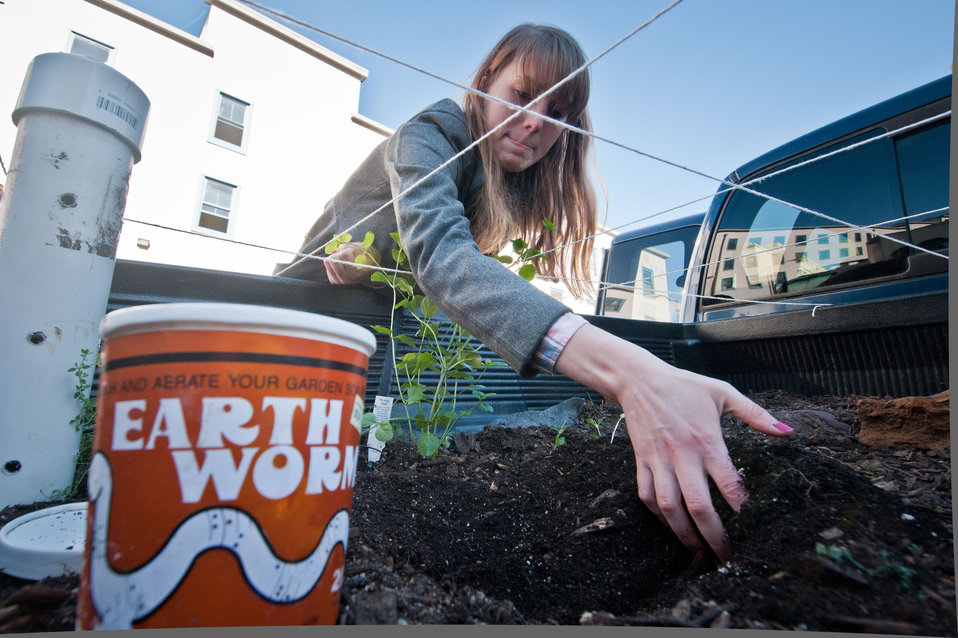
D.C. Central Kitchen’s Nutrition Out Reach Coordinator Lydia Mills prepares a section for seedlings in the bed of the Truck Farm in Washington, D.C., on Friday, April 6, 2012. She works within one of the 25 sections identified with the string grid attached to the Truck Farm bed. Nearby is a container of red wiggler worms that will go into the white plastic pipe worm tower, where decomposing food scraps will be eaten by the worms. The underground holes allow worms to burrow throughout the truck bed soil improving aeration, and their castings add nutrients for the plants. The Truck Farm is a D.C. Central Kitchen and U.S. Department of Agriculture People’s Garden Initiative partnership that, like other Truck Farms around the country, will travel around the city to schools and community sites, teaching children about healthy eating and where their food comes from by using the garden display in its truck-bed. Along with other local donors, the People’s Garden Initiative supports this “edible exhibit” by providing seedlings and educational materials. Ms. Mills is on staff with D.C. Central Kitchen for one year as part of her AmeriCorps VISTA service.